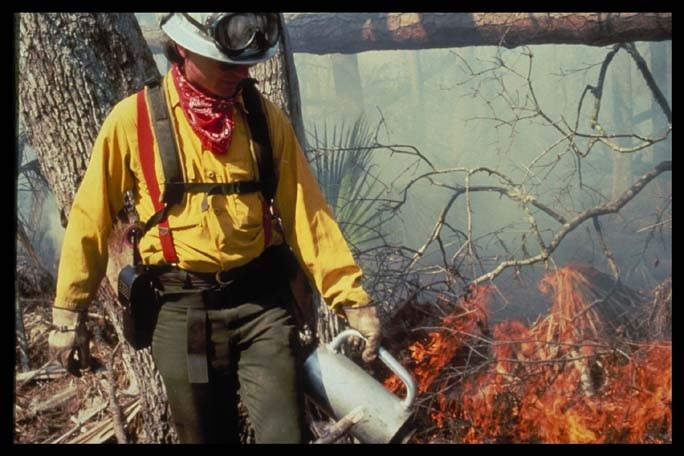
Prescribed fire